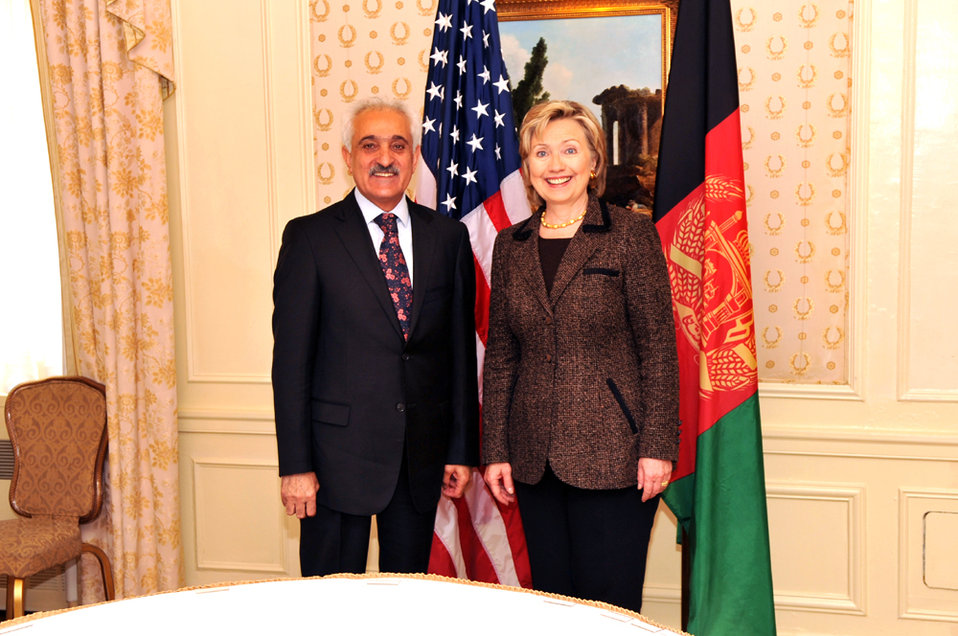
UNGA 2009: Secretary Clinton Meets With Afghan Foreign Minister

U.S. Secretary of State Hillary Rodham Clinton meets with Afghan Foreign Minister Rangin Dadfar Spanta at the Waldorf Astoria hotel in New York City, New York September 28, 2009.